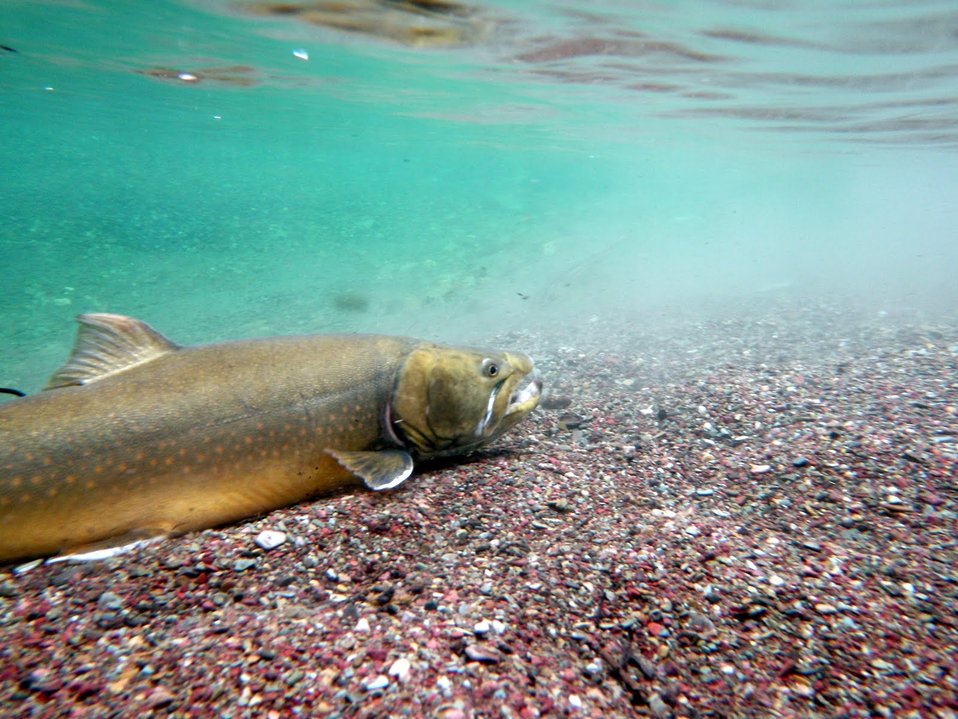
Bull trout underwater.